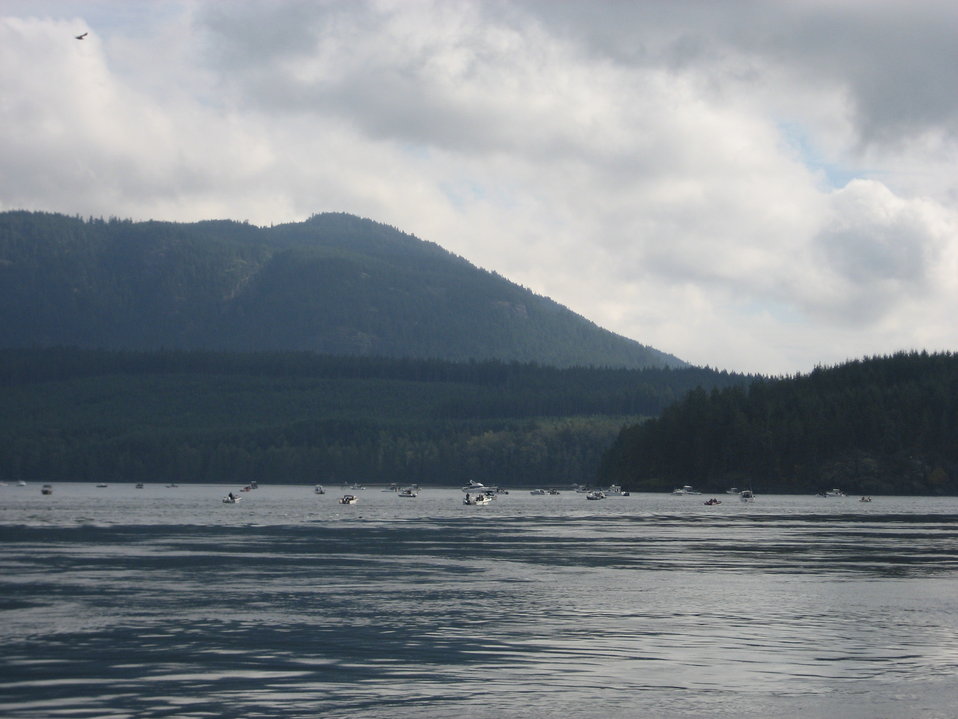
Salmon fishing along the Inside Passage.